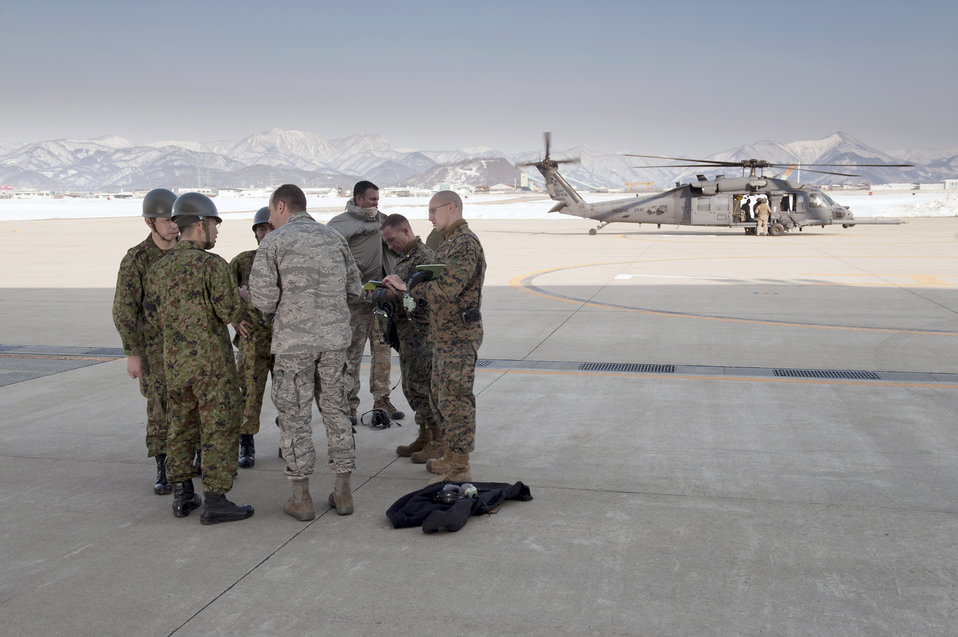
Yamagata a fuel staging area

Members of the Japan Ground Self-Defense Force and a joint team of U.S. Airmen and Marines discuss the possibility of using Yamagata as a fuel staging area March 13, 2011. The fueling area would be used to refuel aircraft assisting with Japan's earthquake and tsunami recovery.